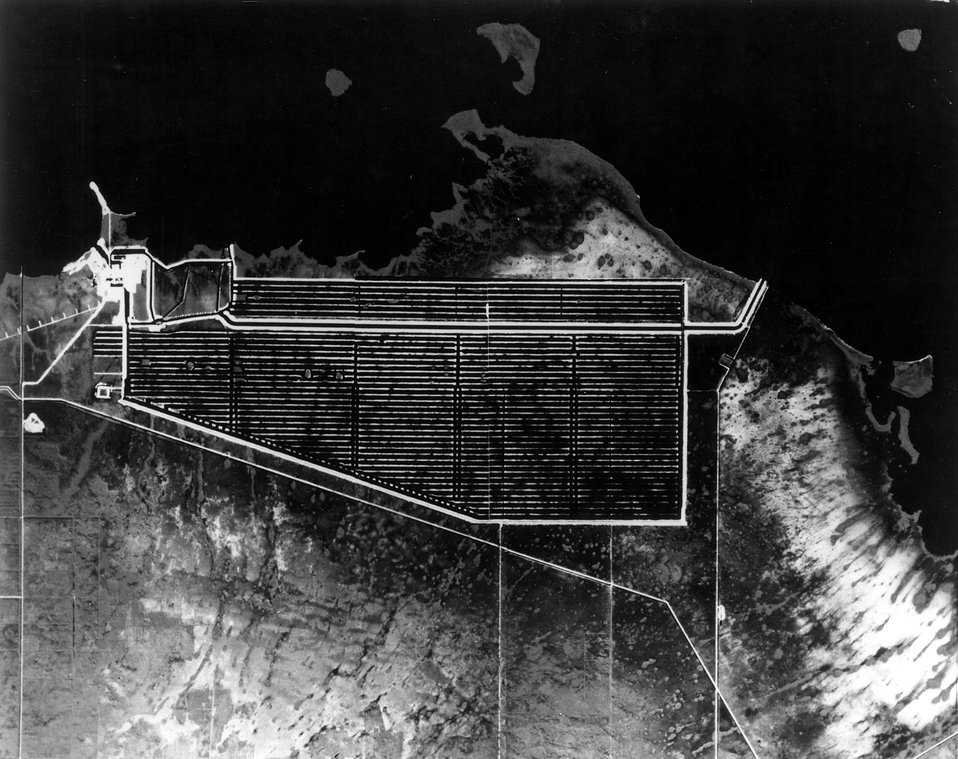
Cooling canal pattern at Florida Power & Light Company's Turkey Point Plant visible in this aerial photo shot from an altitude of 25,000 feet. The 'enclosed' system uses 168 miles of canals to cool water for four generating units--including Florida's first two nuclear units--in South Dade County. Some 12 miles of mangrove shoreline, to the east and south of the cooling system, were deeded to the State by PPL as a wilderness preserve. Circa 1974.